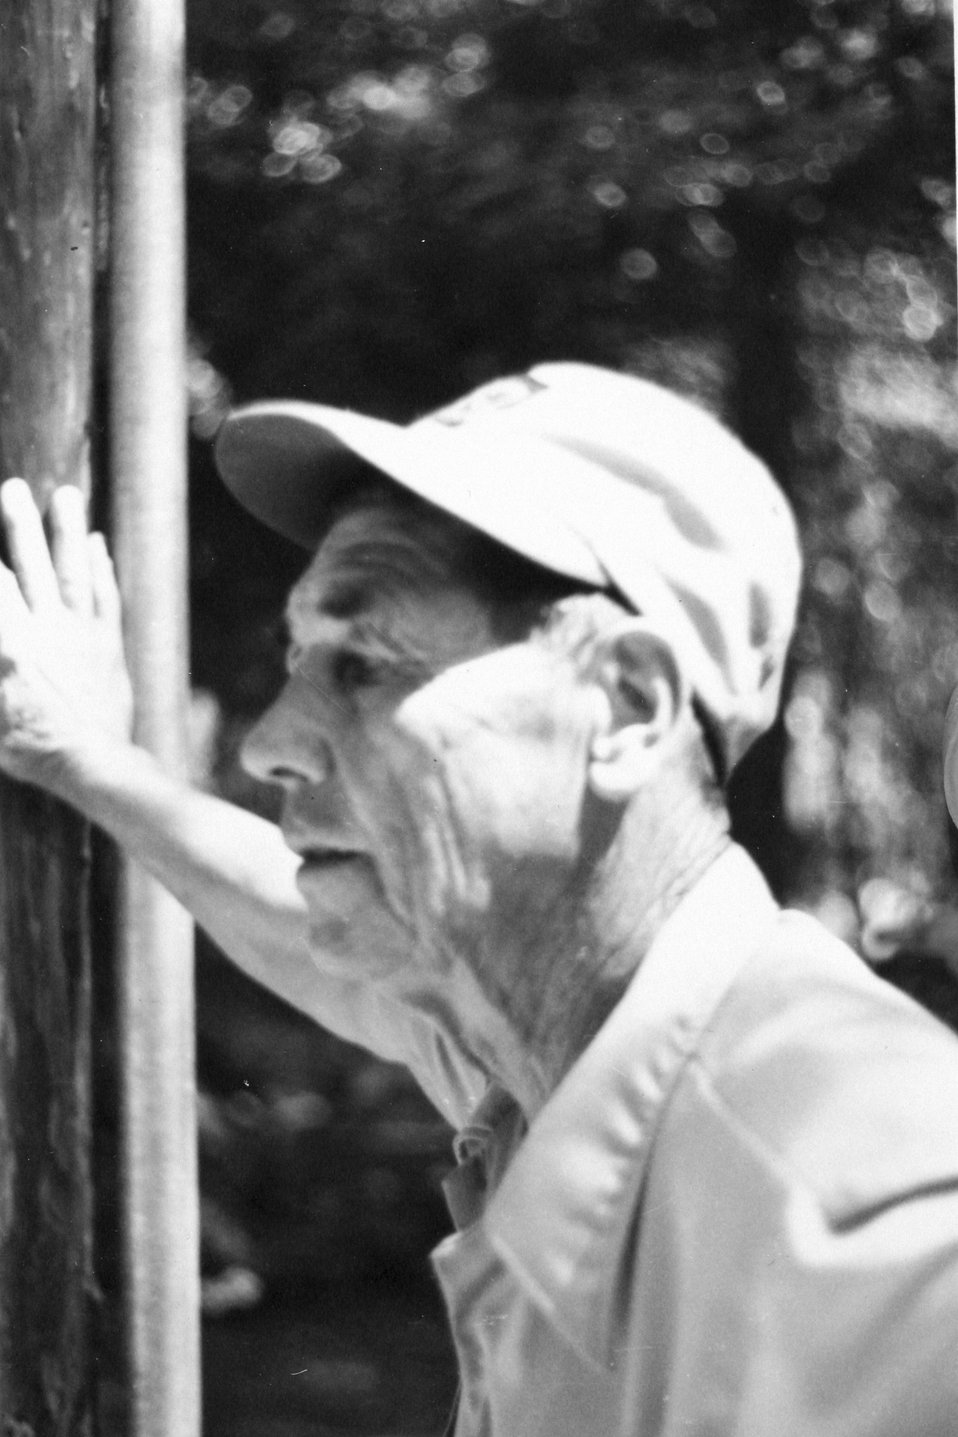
Elwin Frye. Born October 1, 1907 grandchild of Adleine and John Billings. He was the son of Leo and Viola Billings.